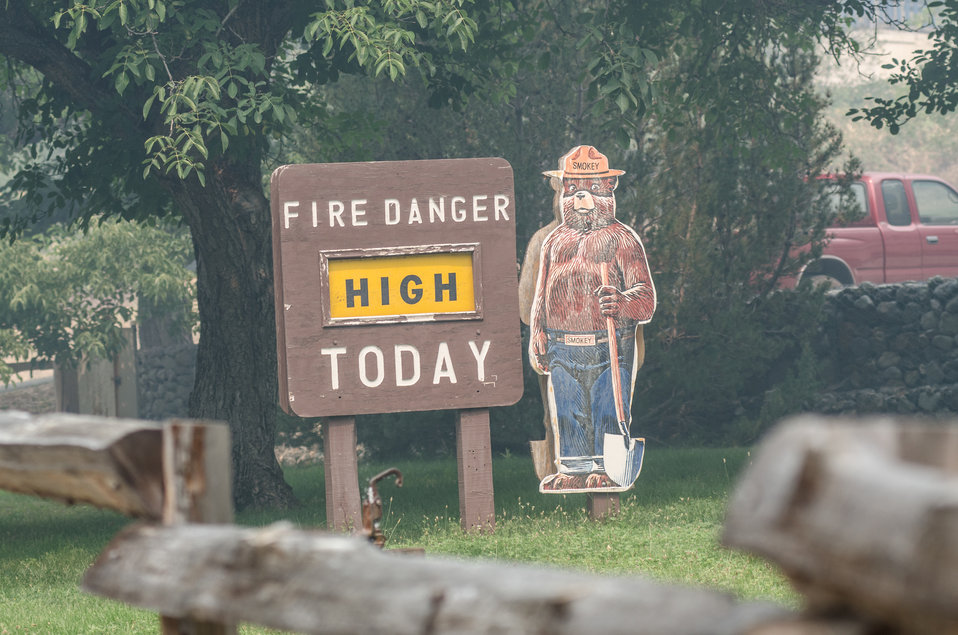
Smoke permeates the air of Sawyers Bar, CA, on Wednesday, Aug. 6, 2013. Salmon River Complex Fire is northwest of Sawyers Bar and west of Etna and Yreka, CA in the Klamath National Forest.